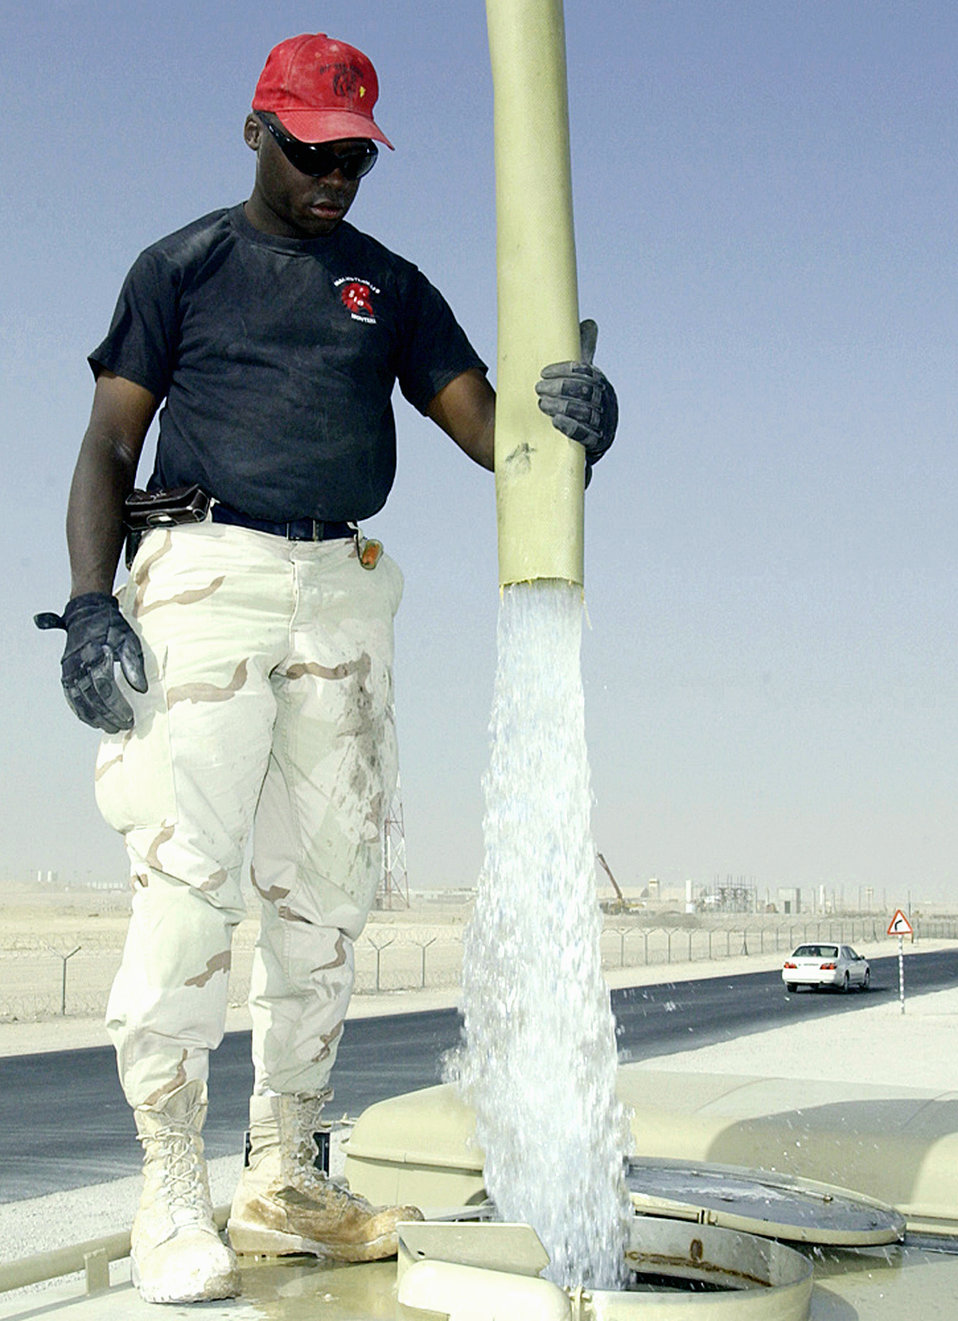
Water world

SOUTHWEST ASIA -- Tech. Sgt. Robert Glasco fills a base water truck at a forward-deployed location. Sergeant Glasco is assigned to the1st Expeditionary Red Horse Group and deployed from Malmstrom Air Force Base, Mont. He is supporting operations Enduring Freedom and Iraqi Freedom.